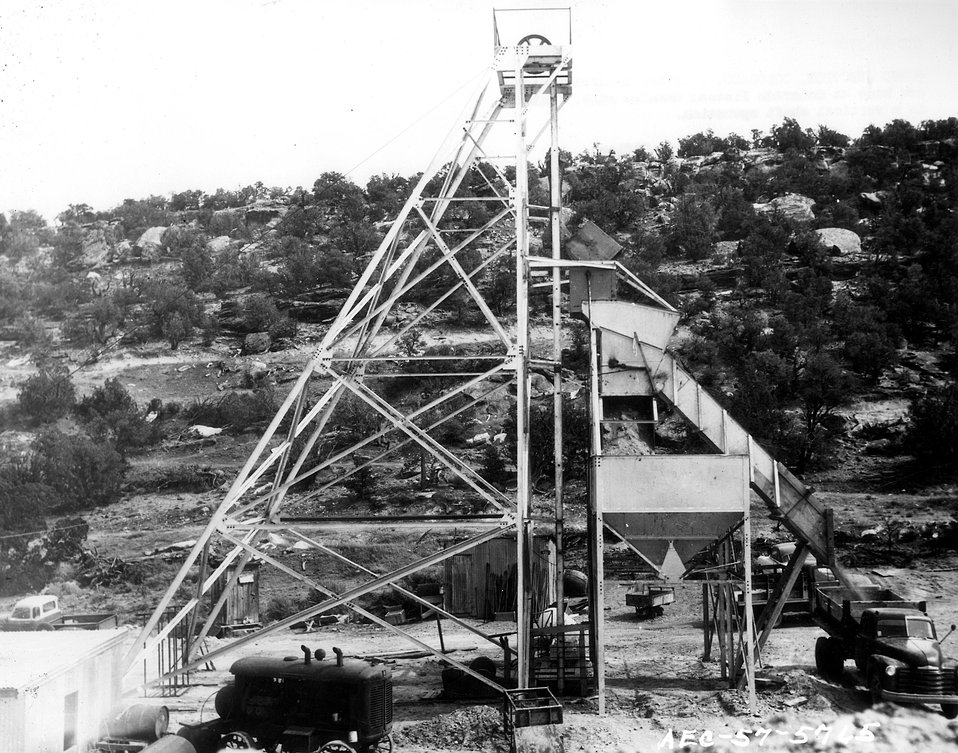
Steel head frame and ore bins at Colorado Plateau uranium mine. c. 1957